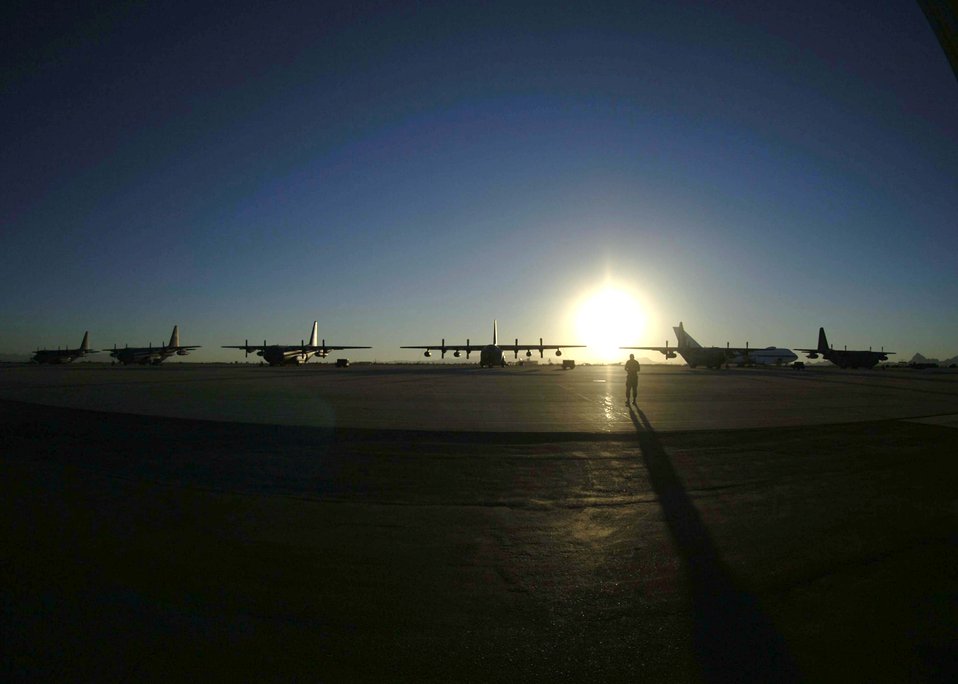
Keeping the fleet going

DAVIS-MONTHAN AIR FORCE BASE, Ariz. (AFPN) -- A crew chief with the 563rd Maintenance Squadron walks toward a fleet of C-130 Hercules aircraft at sunset here.